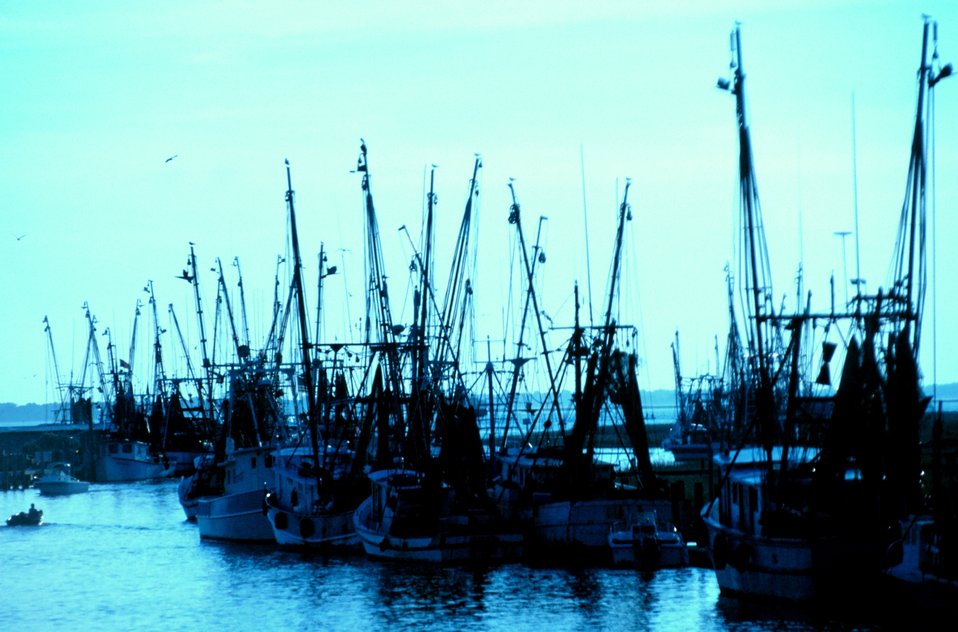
Part of the shrimp fleet near Charleston.